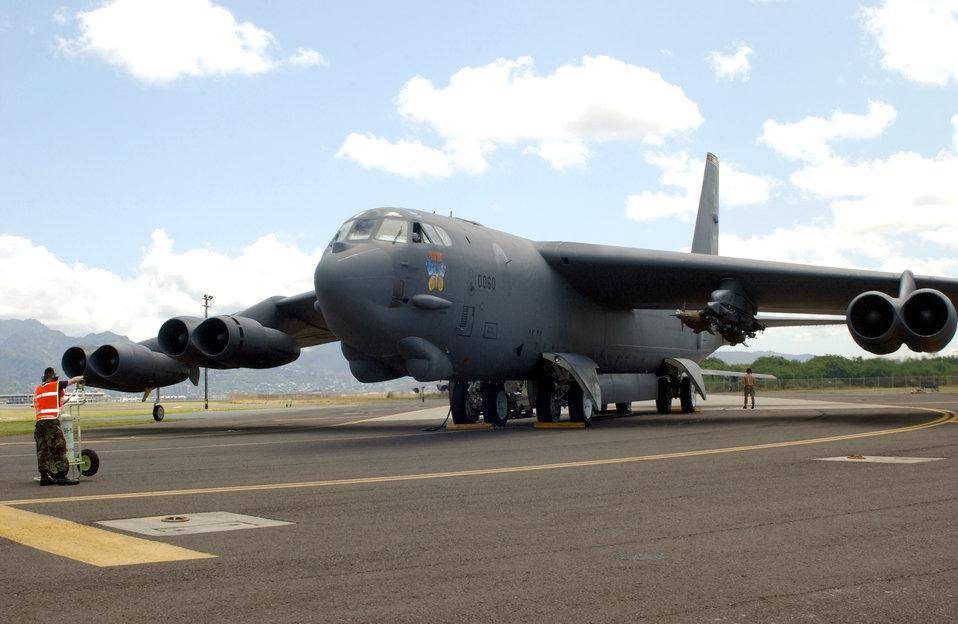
The B-52s

HICKAM AIR FORCE BASE, Hawaii -- A B-52 Stratofortress is prepared for take off on the runway April 6. Four B-52s arrived here from Andersen Air Force Base, Guam, to escape Typhoon Sudal which missed the island April 7. The B-52s are deployed to Andersen from Minot AFB, N.D.